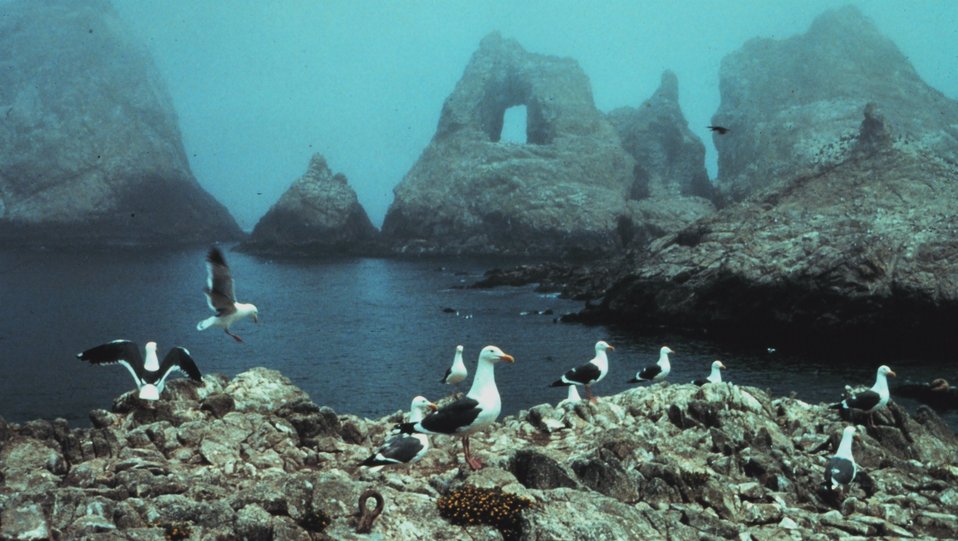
A foggy day in the Gulf of the Farallones National Marine Sanctuary